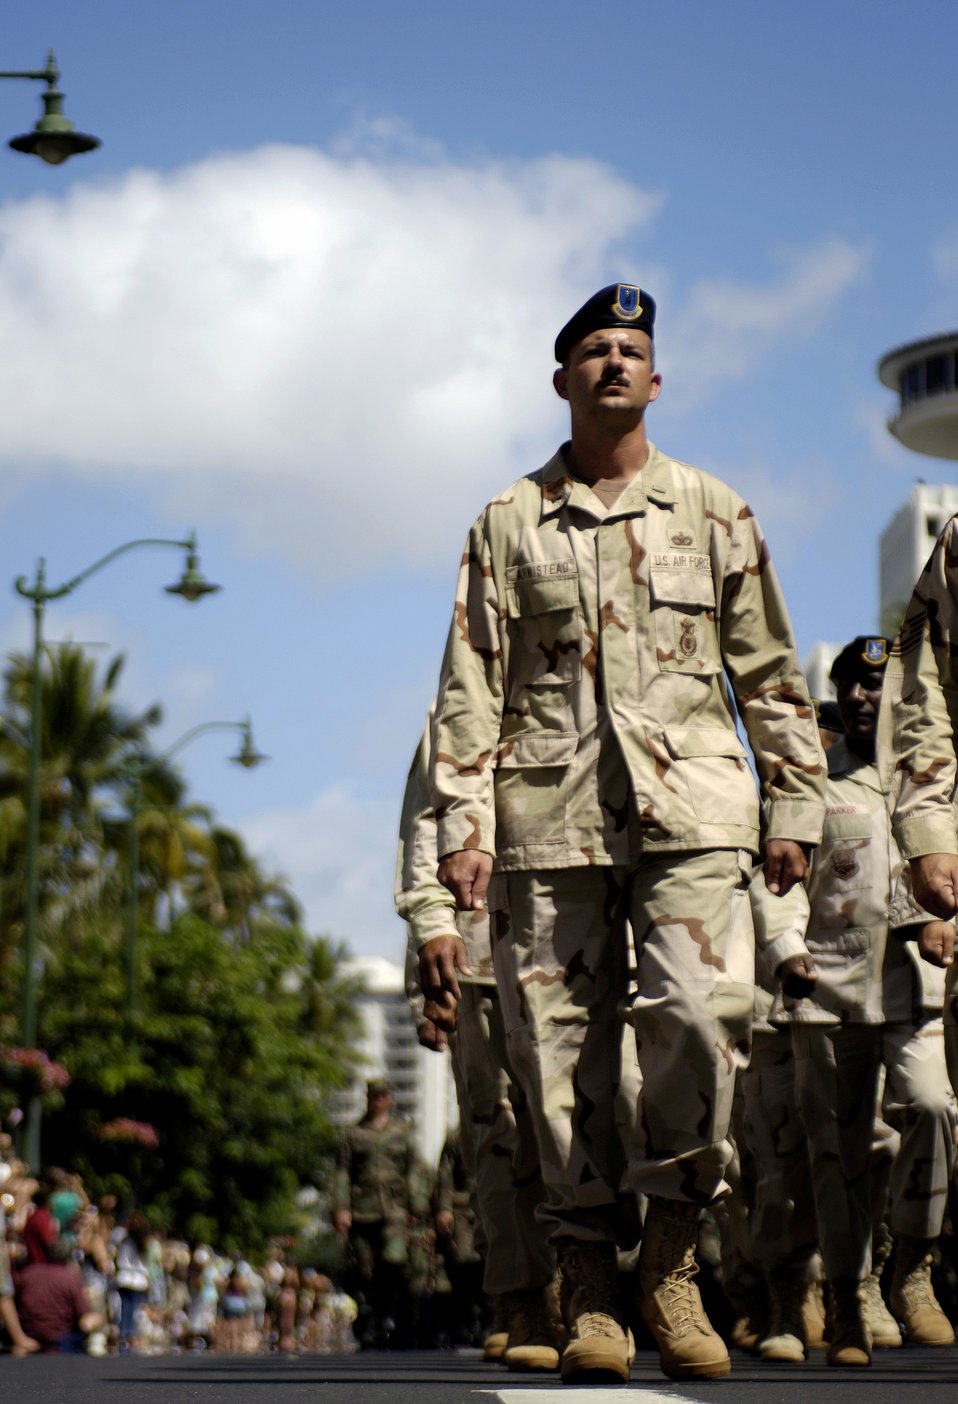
A salute to the troops

Security Forces Airmen from Hickam Air Force Base, Hawaii, who recently returned from a deployment, march in the